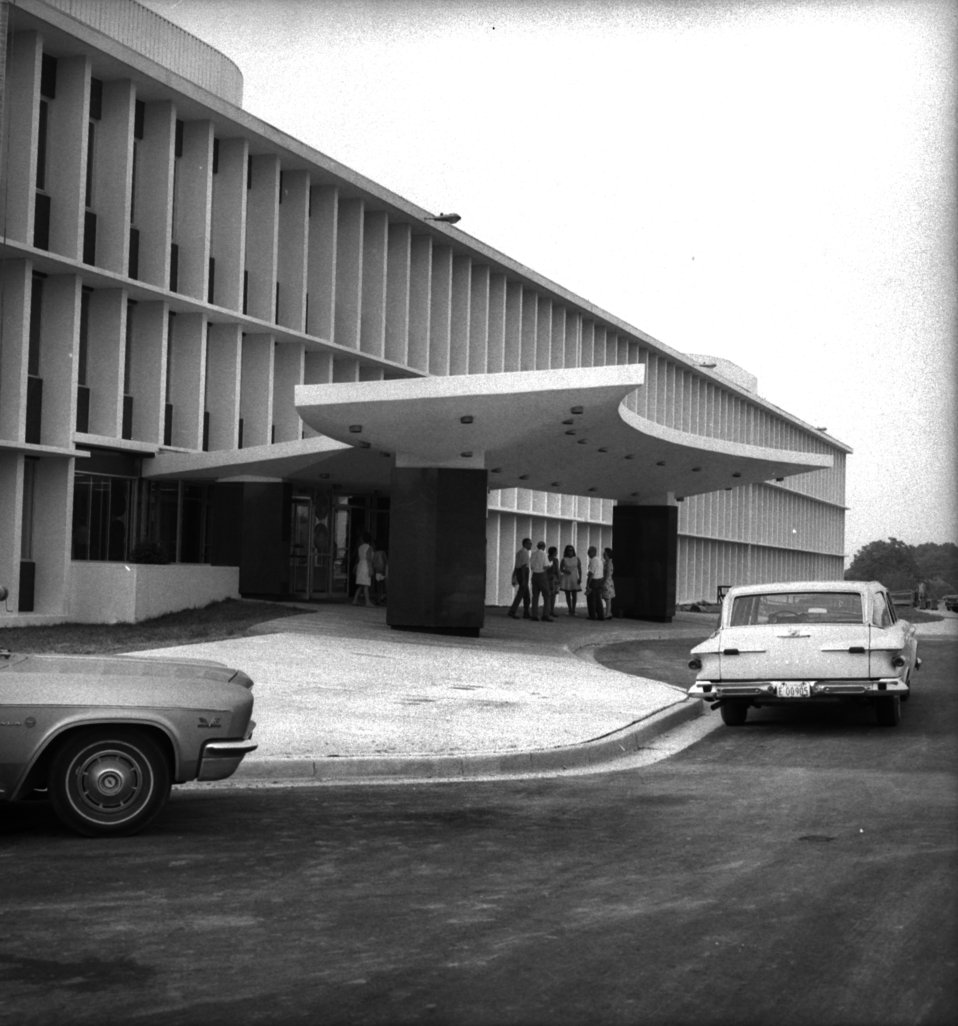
Formal Dedication New AEC (Atomic Energy Commision) - FOB (Federal Office Building) Oak Ridge

70-177b DOE Photo by Frank Hoffman Formal Dedication New AEC (Atomic Energy Commision) - FOB (Federal Office Building) Oak Ridge Tennessee 6-27-1970